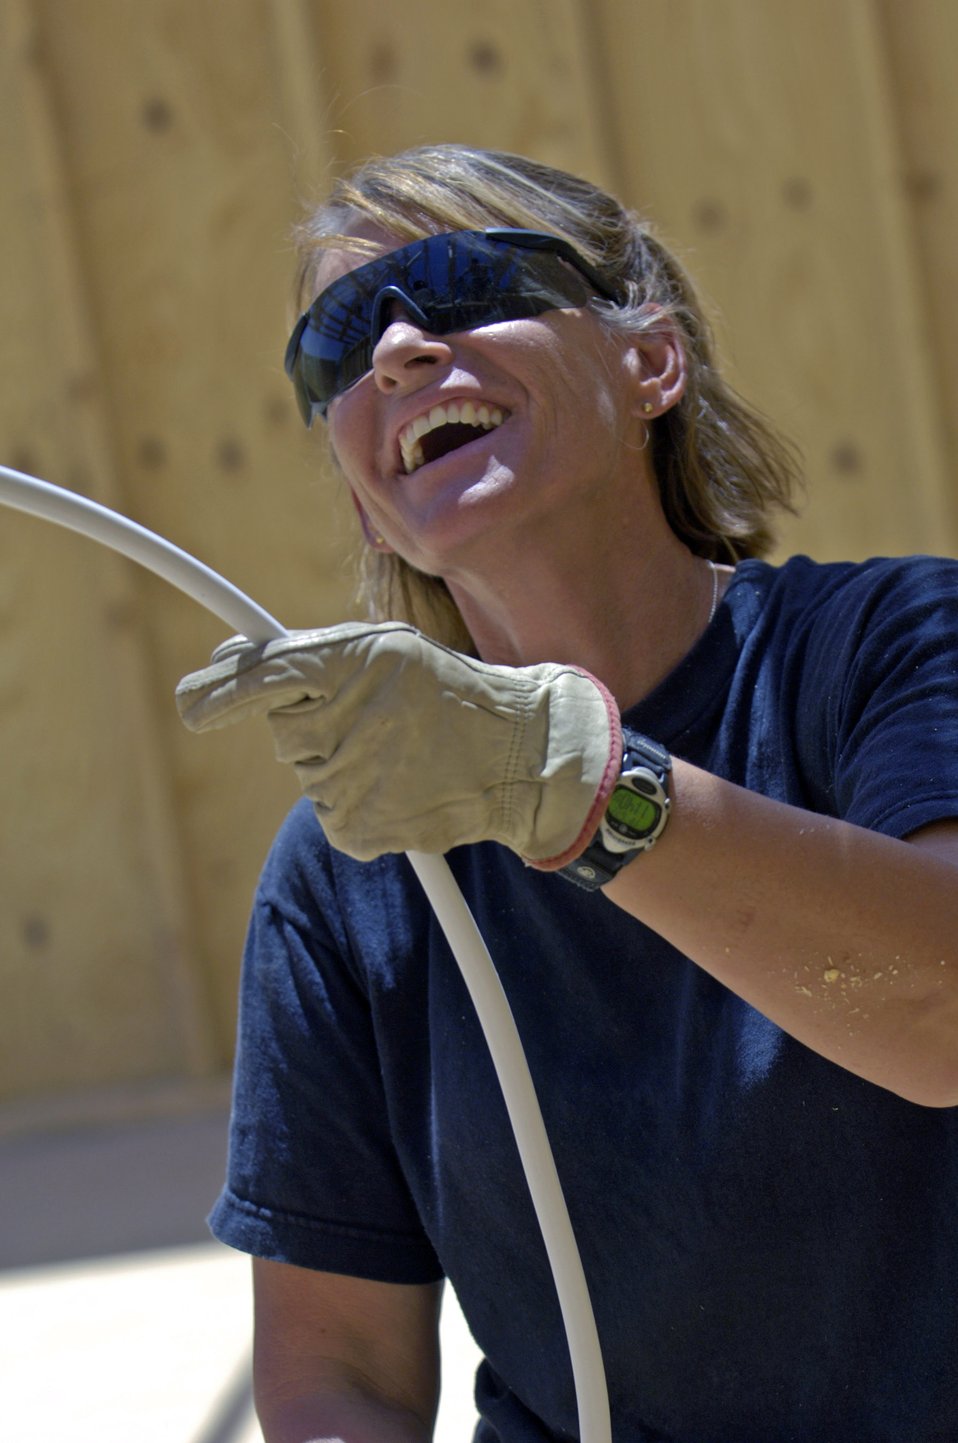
RED HORSE Airmen support Army in southern Baghdad

Master Sgt. Lori Bordman runs electrical wires up into the rafters in the first of four tactical operations centers June 22 at Forward Operating Base Kalsu, Iraq. Sergeant Bordman is an electrician with the 557th Expeditionary RED HORSE Squadron and a reservist deployed from Nellis Air Force Base, Nev., and is originally from Copperas Cove, Texas. She and her fellow Rapid Engineer Deployable Heavy Operational Repair Squadron Engineers,or RED HORSE, Airmen are forward deployed from Balad Air Base, Iraq, to build the four tactical operations centers for the Army's 2nd Brigade combat team, 3rd Infantry Division headquartered here. The 2/3 ID are currently running their operations out of tents. The Air Force Red Horse unit was requested by the Army to come into this